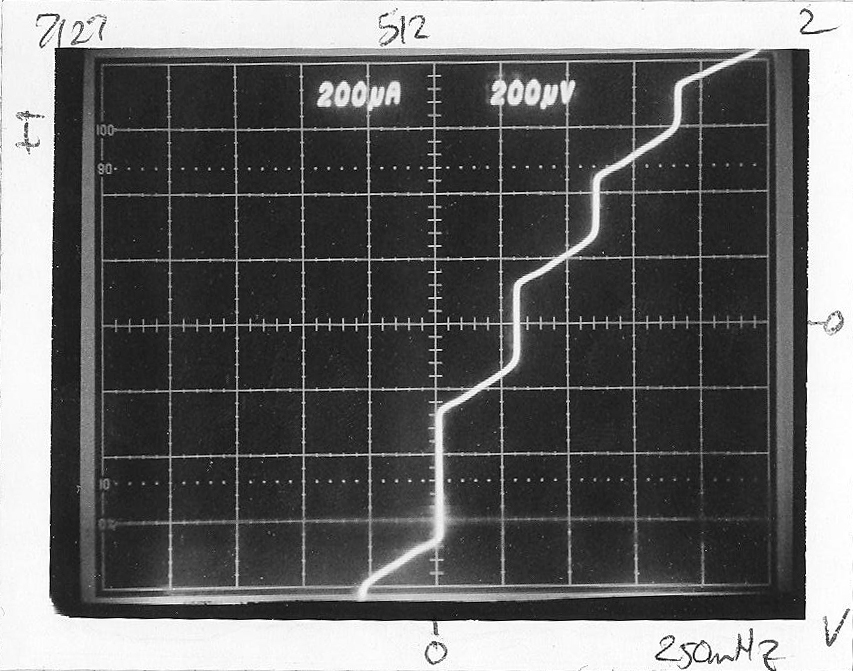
1996--Original photo of oscilloscope trace

Shows the first measurement of quantized voltage steps driven by pulses.